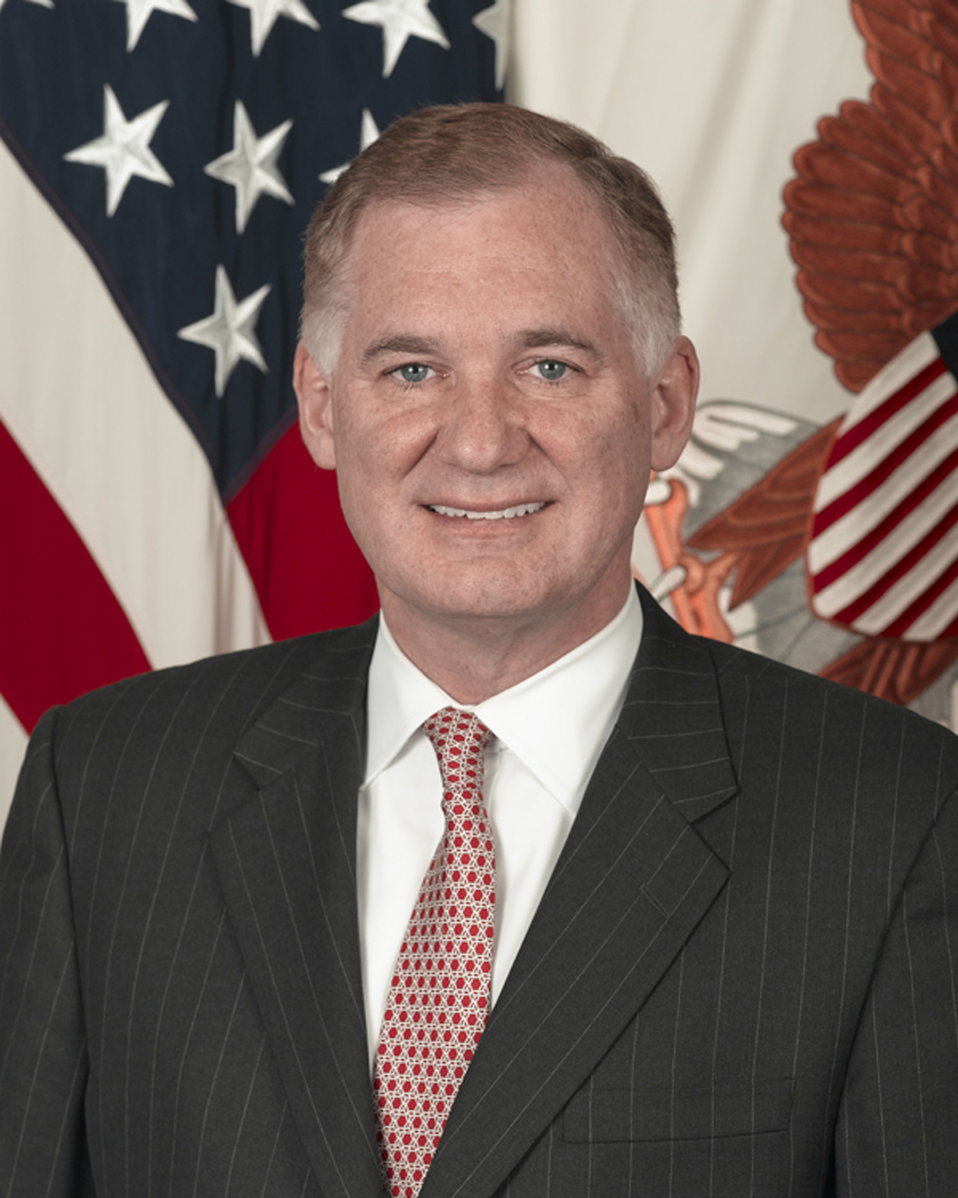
Cyber-age challenges

Deputy Secretary of Defense William Lynn described how adversaries are seeking new avenues to challenge the U.S. as he addressed attendees Jan. 21, 2010, at the 38th Institute for Foreign Policy Analysis-Fletcher Conference in Washington, D.C.